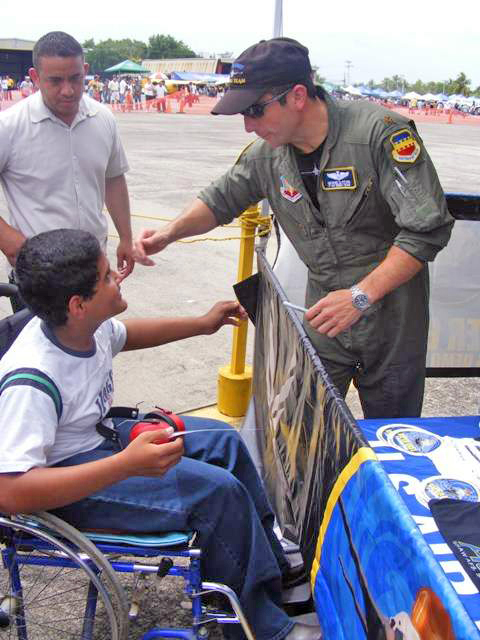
Honduras airshow aids local hospital

Maj. George Clifford greets a Honduran boy after his aerial demonstration at an airshow June 20 at San Pedro Sula, Honduras. More than 30 Airmen participated at the international airshow. Major Clifford is a Viper East F-16 Demonstration Team pilot.